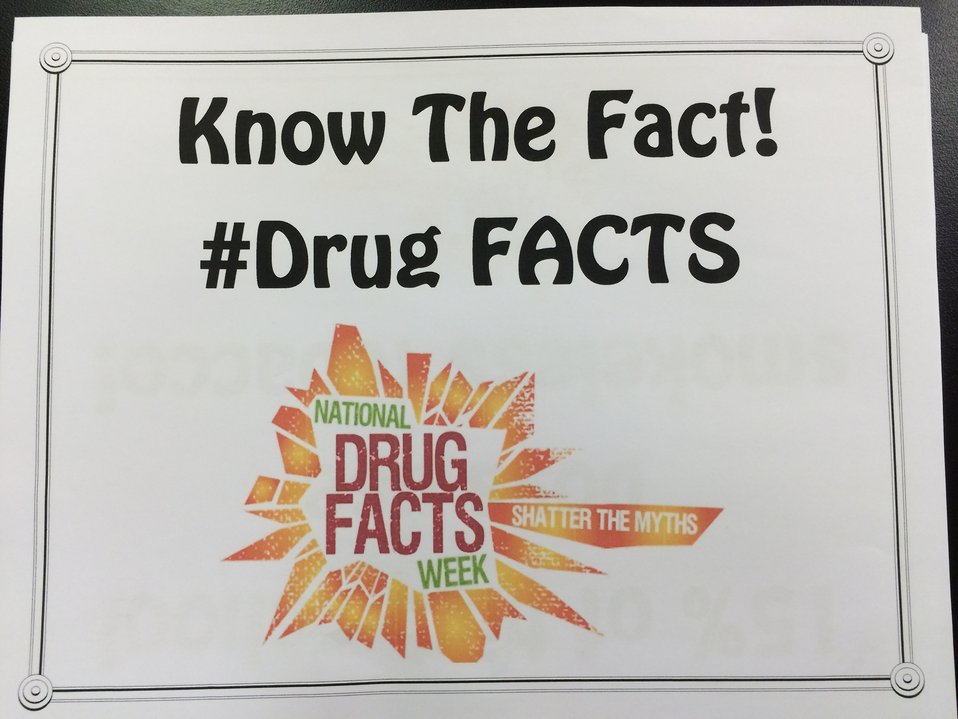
#DrugFACTS

Teenagers from the Van Buren County SAFE Coalition's, Youth Leadership Council (YLC) in Keosauqua, Iowa participate in various events during National Drug Facts Week, 2014.